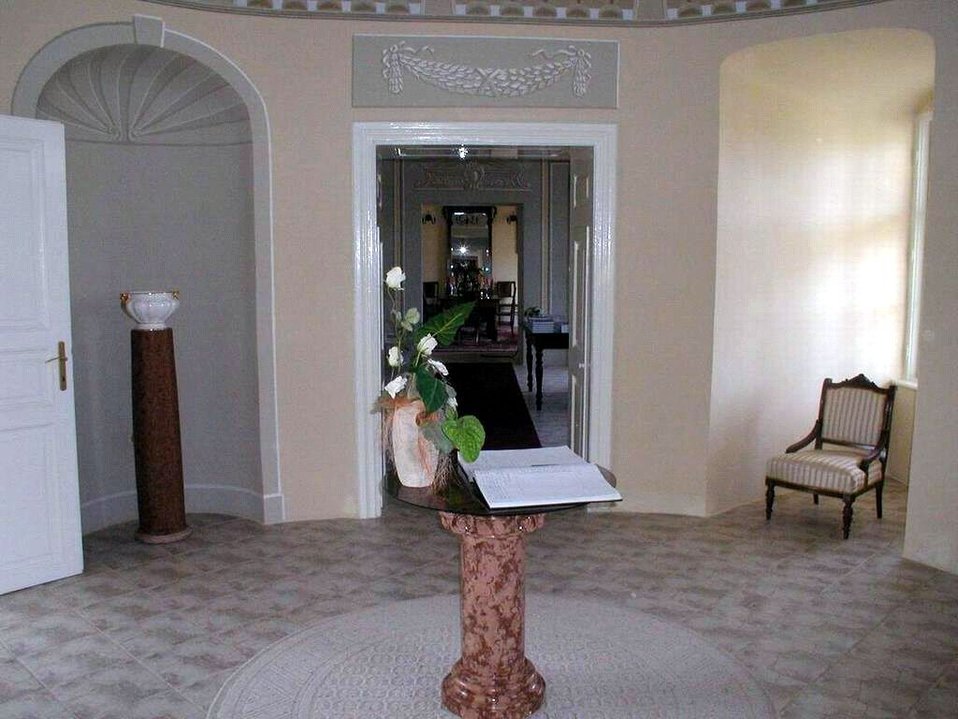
Vstup do kaštieľa Licencovanie: Autorom fotografie je Imrich Šimonek z Dubníka sk:Kategória:Presunúť na Commons